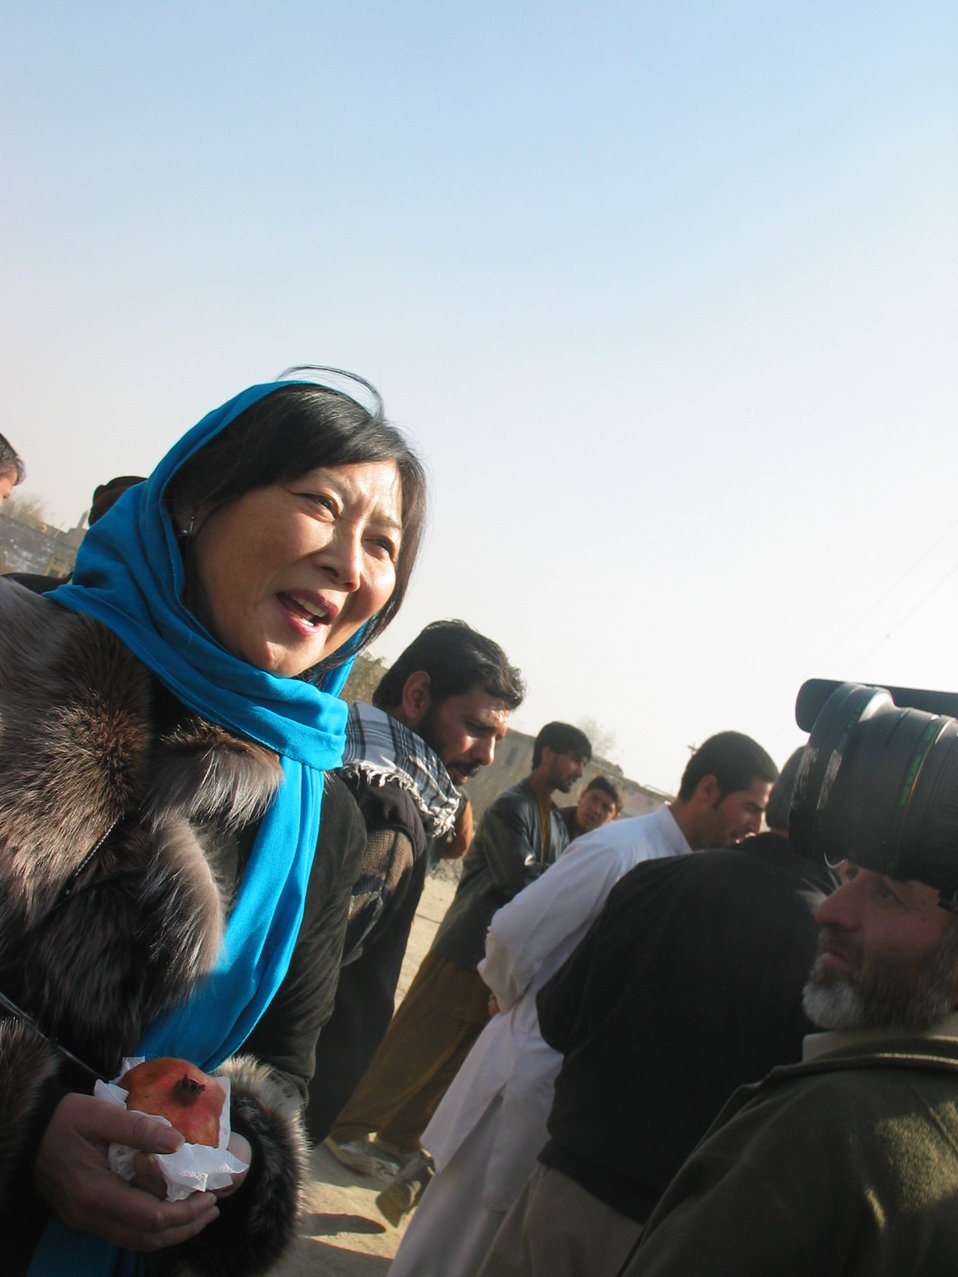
Kabul River Bridge Renovation, December 3, 2010